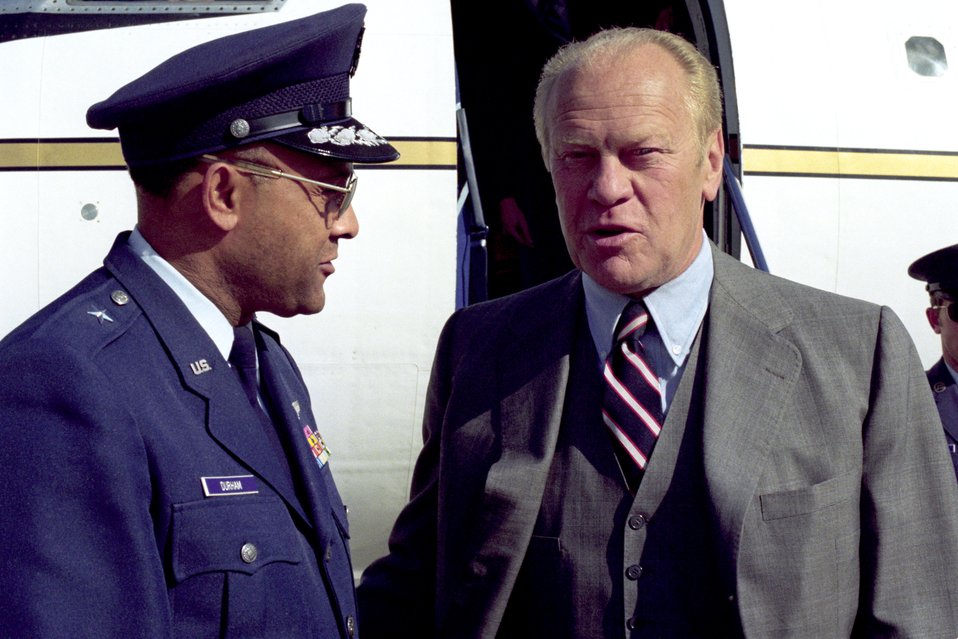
Ford helped U.S. recover from Watergate

Brig. Gen. Archer L. Durham greets former President Gerald Ford as he arrives for a visit at Andrews Air Force Base, Md., in 1981. President Ford passed away in his California home Dec. 26 at age 93. General Durham was commander of the 76th Military Airlift Division at Andrews AFB.